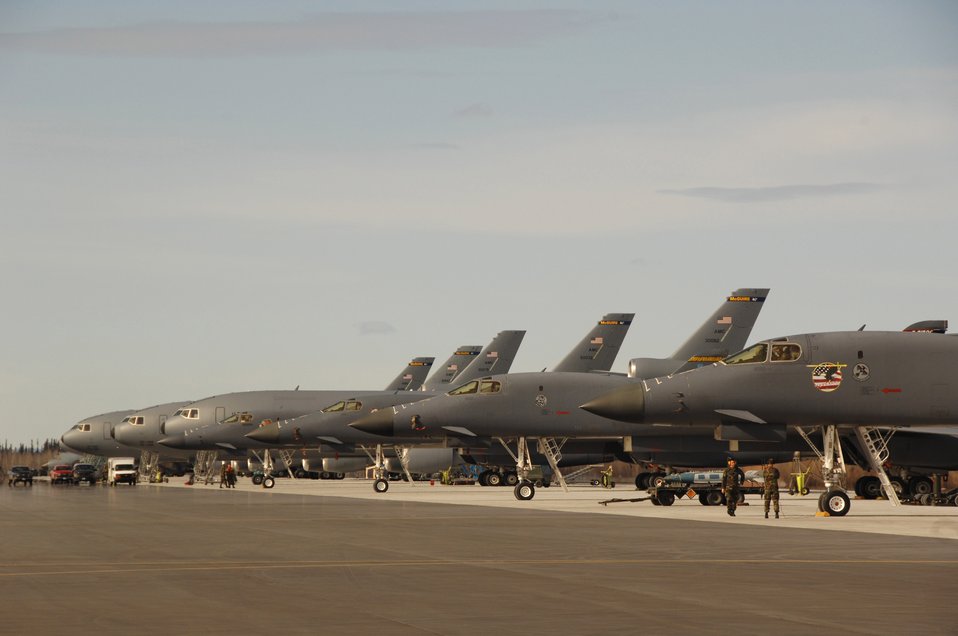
Red Flag-Alaska strengthens coalition forces

Four B-1B Lancers (foreground) from Ellsworth Air Force Base, S.D., and three KC-10 Extenders from McGuire AFB, N.J., sit on the flightline at Eielson AFB, Alaska, April 9 during Red Flag-Alaska 07-1. Red Flag-Alaska enables aircrews to sharpen their combat skills by flying simulated combat sorties in a realistic threat environment. Additionally, the training allows them to exchange tactics, techniques and procedures and improve interoperability.